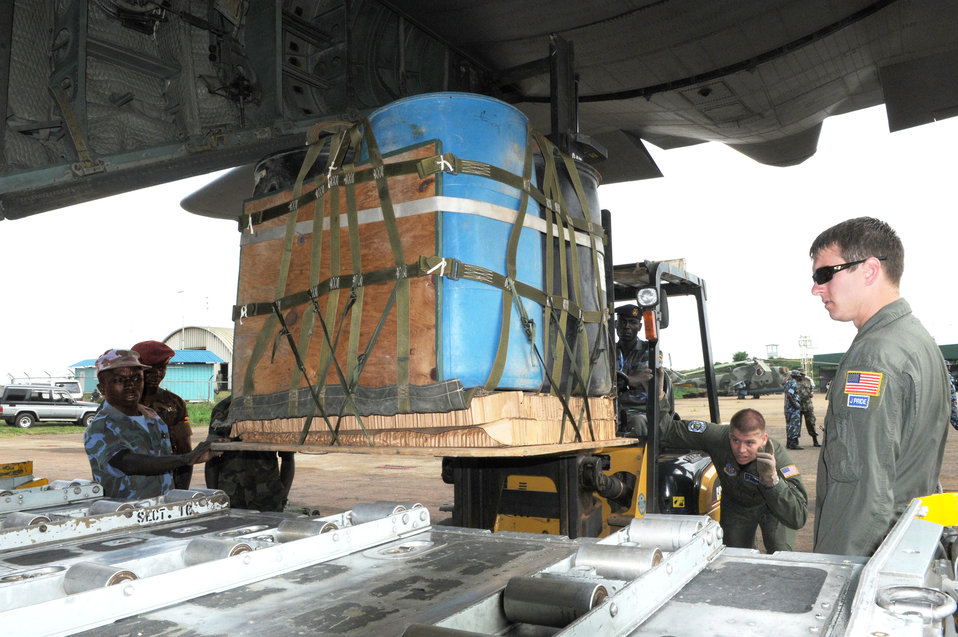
Air Forces Africa Airmen share airdrop expertise with Ugandan forces

Staff Sgt. Brock Knobloch directs the forklift operator as U.S. and Ugandan troops position an airdrop pallet on a C-130 during a theater security cooperation event Hercules Aug. 28, 2009, at Entebbe Air Base, Uganda.